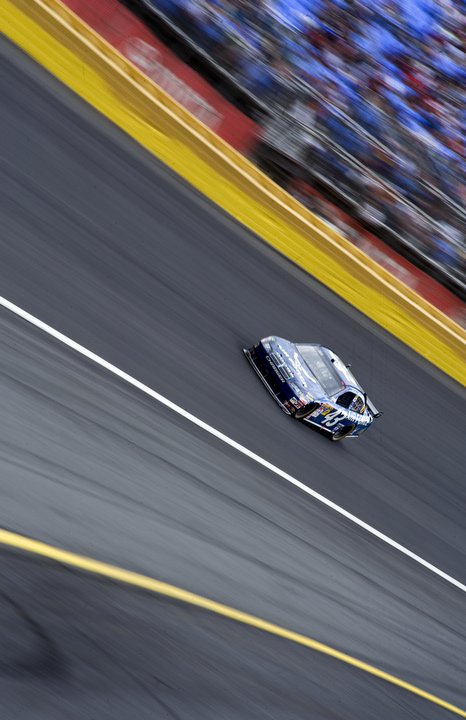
Coca-Cola 600

Reed Sorenson, NASCAR driver of the Richard Petty Motorsports #43 Air Force Dodge Charger, races around the Lowe's Motor Speedway at 186 mph during Coca-Cola 600 Sprint Cup race May 25. The #43 was painted in an Air Force paint scheme as a Salute to the Military for Memorial Day.